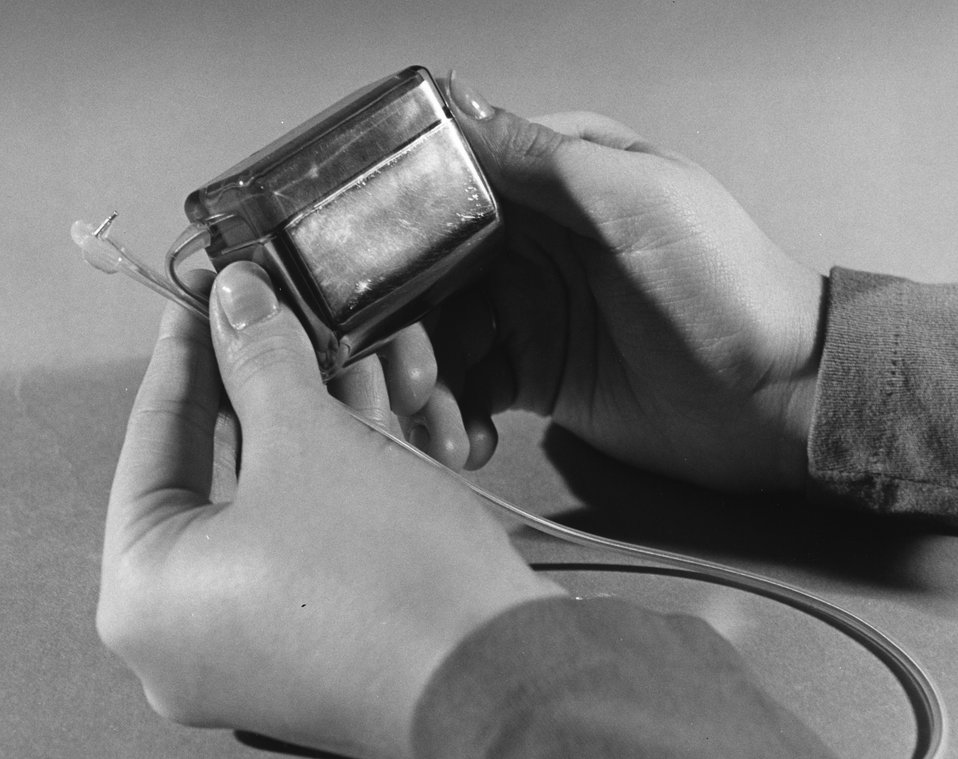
A display model of a nuclear-powered heart pacemaker developed by the U.S. Atomic Energy Commission. Circa 1973.